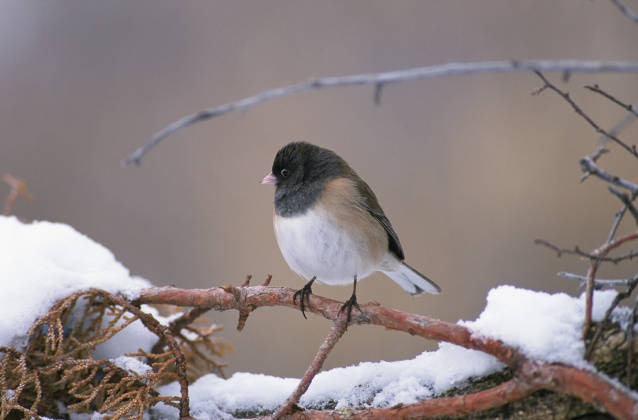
dark-eyed junco

Tule Lake National Wildlife Refuge